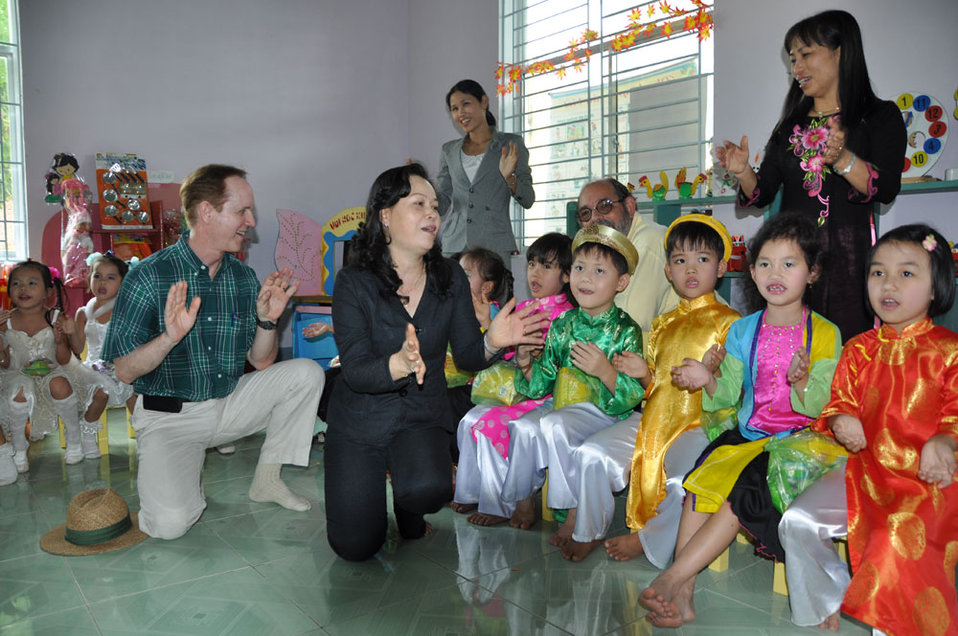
Children in Kon Tum, Vietnam, enjoy their new pre-schools refurbished with USAID funding